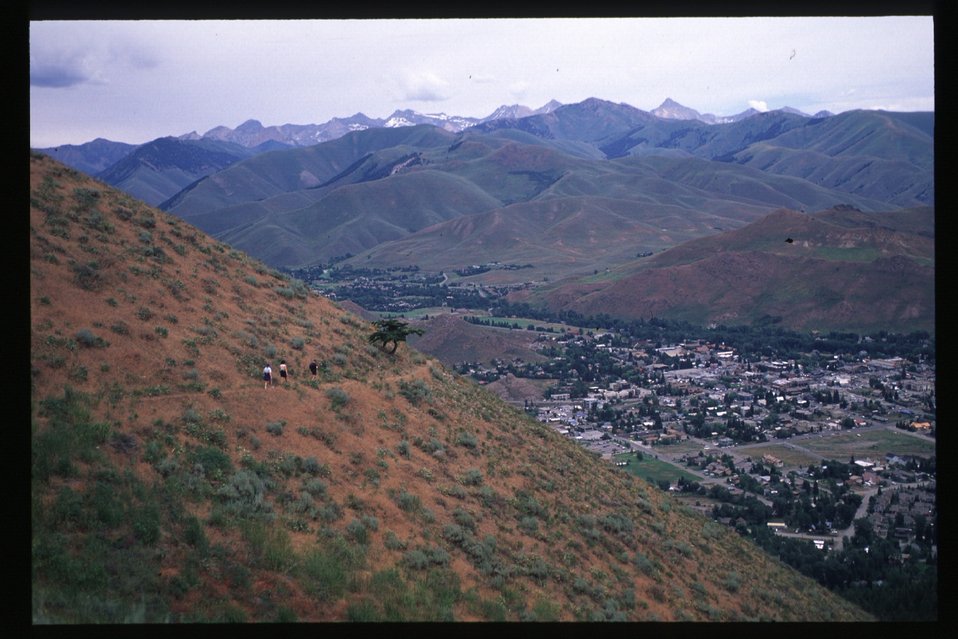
Recreation Scenic Biker Shoshone Field Office USRD Upper Snake River District Bald Mountain Trail Ketchum Overlook